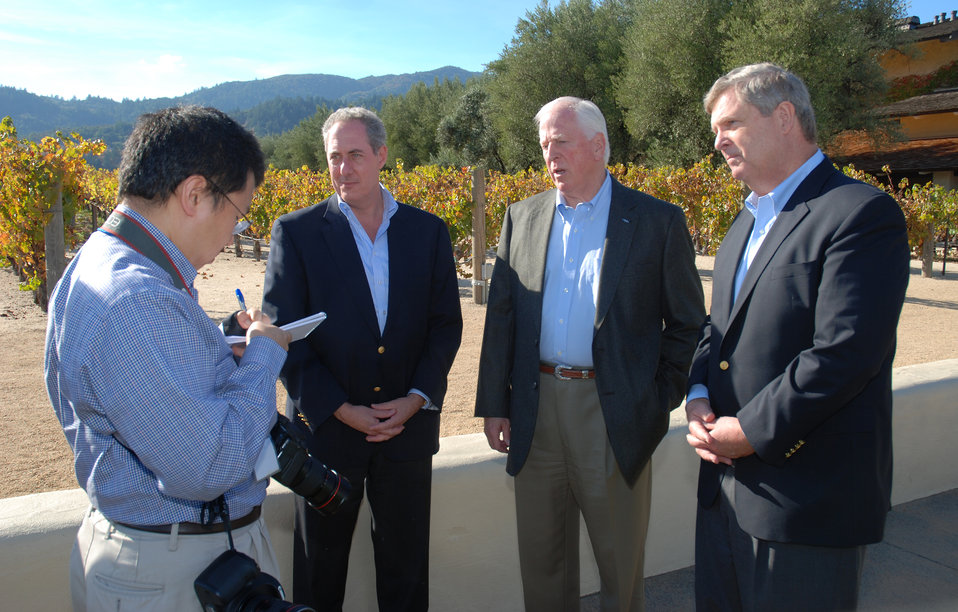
A reporter from the Napa Register meets with (L to R) U.S. Trade Representative Michael Froman, Representative (CA) Mike Thompson, and Agriculture Secretary Thomas Vilsack at the California wine growers' roundtable at the Mondavi Winery in Napa, CA on Sunday, Nov. 17, 2013.